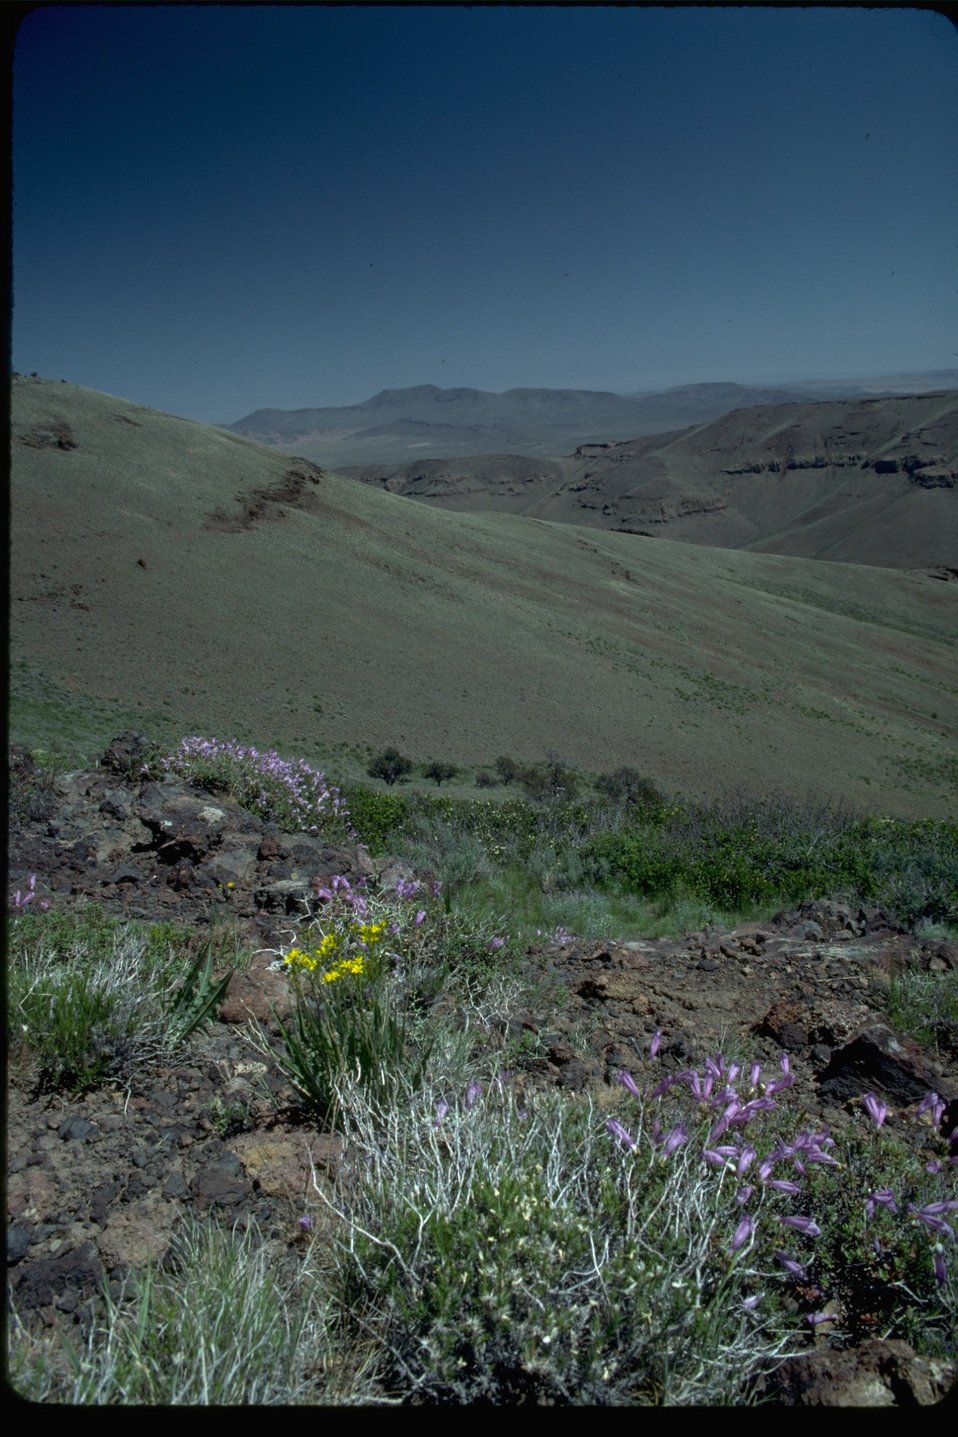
Wildflowers found on the grasslands in the Willow Creek Wilderness Study Area. OR 3-152.